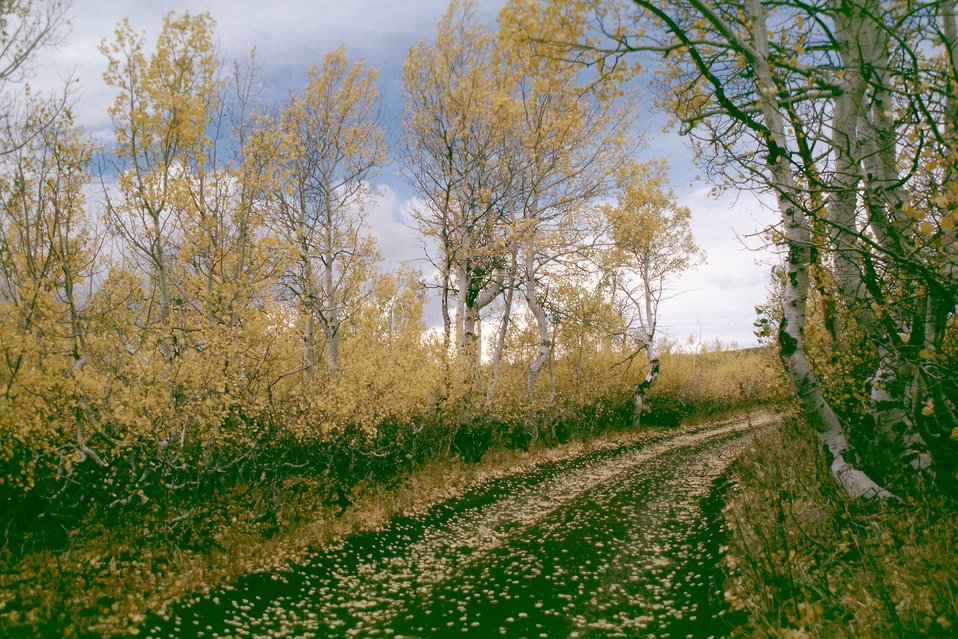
Road to state cabin at Fish Lake camp ground, , Steen's Mountain.